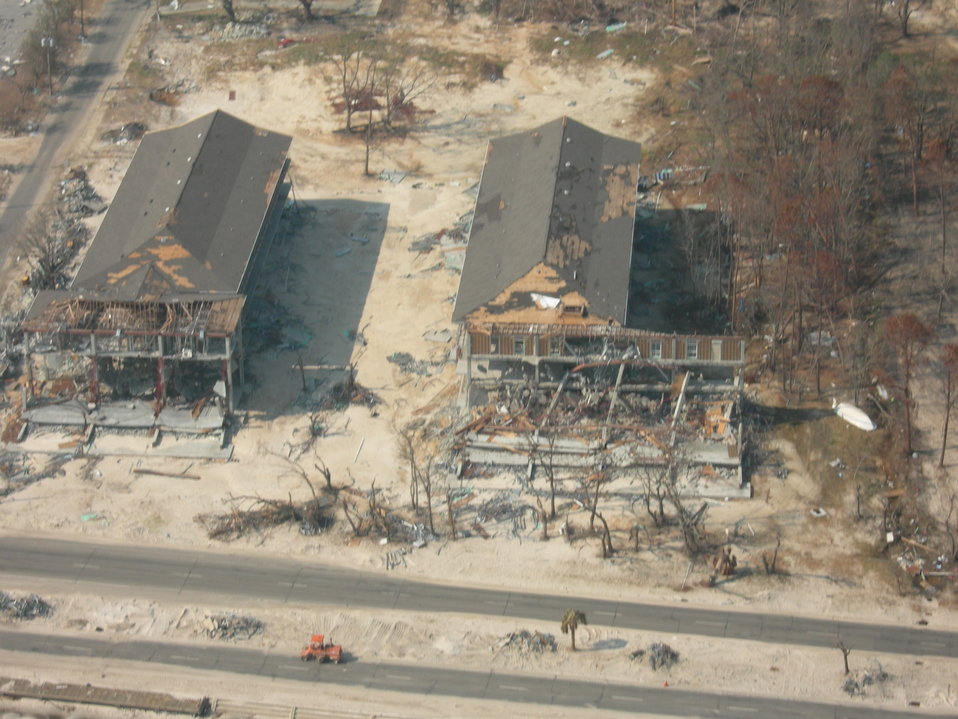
Buildings in New Orleans, LA, were demolished by hurricane Katrina’s 20-foot storm surge that overwhelmed the city’s levees. Hurricane Katrina was the 6th strongest hurricane in U.S. history and the 5th deadliest. Katrina made landfall on Monday morning, August 29, 2005 as a Category 3 hurricane with sustained winds of 125 mph with over a 20-foot storm surge. Katrina caused catastrophic damage over 90 thousand square miles across Louisiana with an estimated $75 billion dollars in damage. The total economic impact to the Gulf Coast was estimated at over $150 billion. 80% of New Orleans, LA, was underwater with some areas more than 20 feet deep. Less than a month later southern Louisiana was struck by a second Category 3 hurricane Rita inflicting more damage in the southwestern areas of Louisiana adding an addition $12 billion worth of damage to the already beleaguered state. The U.S. Army Corps of Engineers (USACE) under the auspices of the Federal Emergency Management Agency (FEMA) was the lead service in providing assistance to the citizens of Louisiana. The U.S. Department of Agriculture (USDA) supplied emergency food aid, emergency loan assistance to farmers and home owners, and USDA personnel from around the nation volunteered their time and muscle to aid in the recovery operations. USDA Photo Terri Teuber.